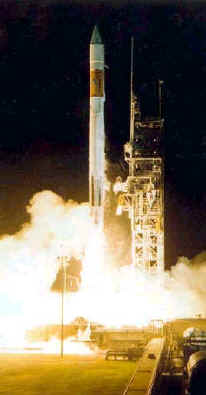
Atlas II